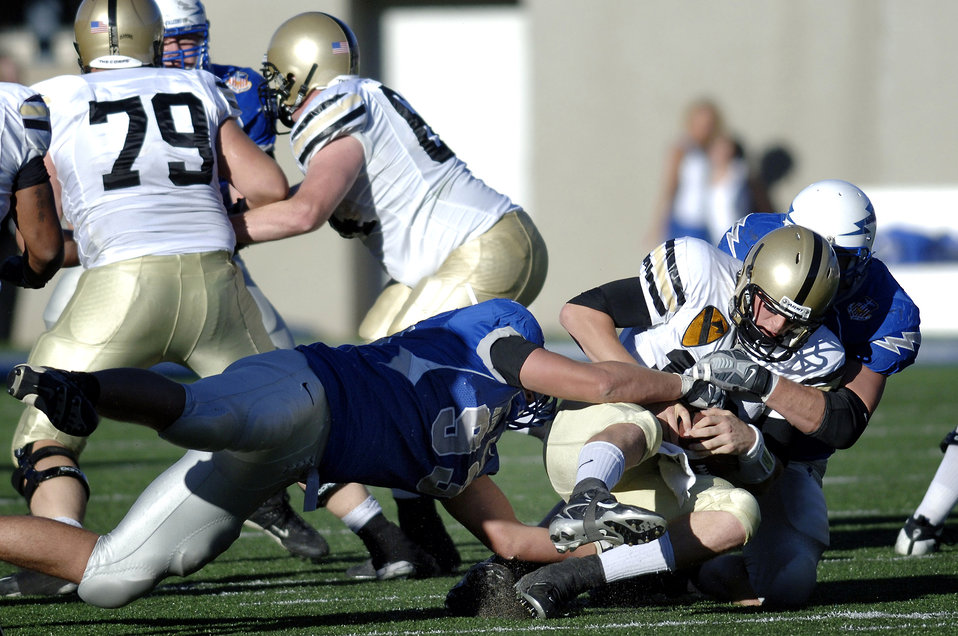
Football: Falcons ride record-breaker Hall over Army

Falcon nose guard Ben Garland, 93, and a fellow bluesuit defender combine to sack Army quarterback Carson Williams during Air Force's 30-10 win over the Black Knights Nov. 3 at Falcon Stadium in Colorado. Air Force registered five sacks for 42 yards in losses in the game.